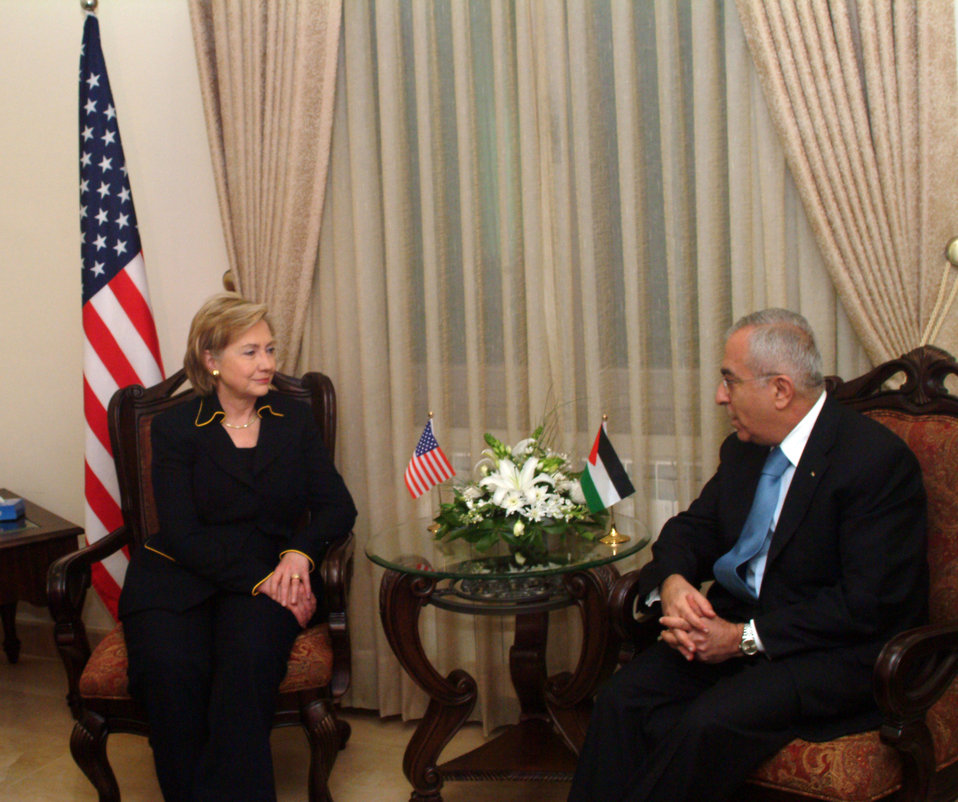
Secretary Clinton With Palestinian Authority Prime Minister

U.S. Secretary of State Hillary Rodham Clinton with Palestinian Authority Prime Minister Salam Fayad in Ramallah March 4, 2009.